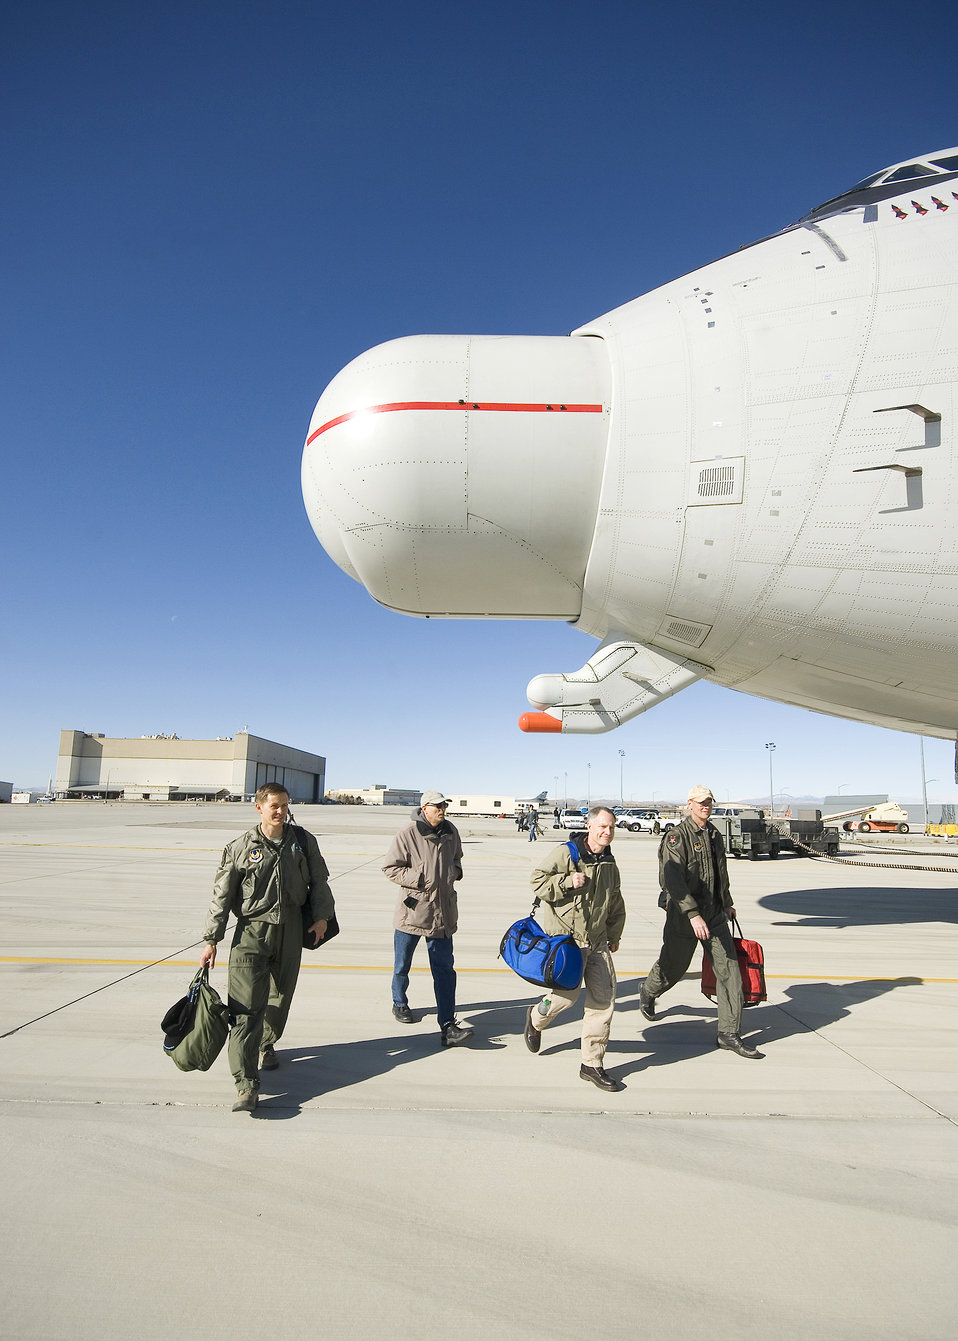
Airborne Laser Test Bed bids adieu to Edwards

(From left to right) Lt. Col. Jeff Warmka, the Airborne Laser Test Bed Combined Test Force director; Doug Canning, the ALTB CTF test conductor; Barry St. Germain, a Boeing pilot; and Roc White, the ALTB CTF test conductor, step to the ALTB aircraft Feb. 14, 2012, before starting engines for its final flight at Edwards Air Force Base, Calif.